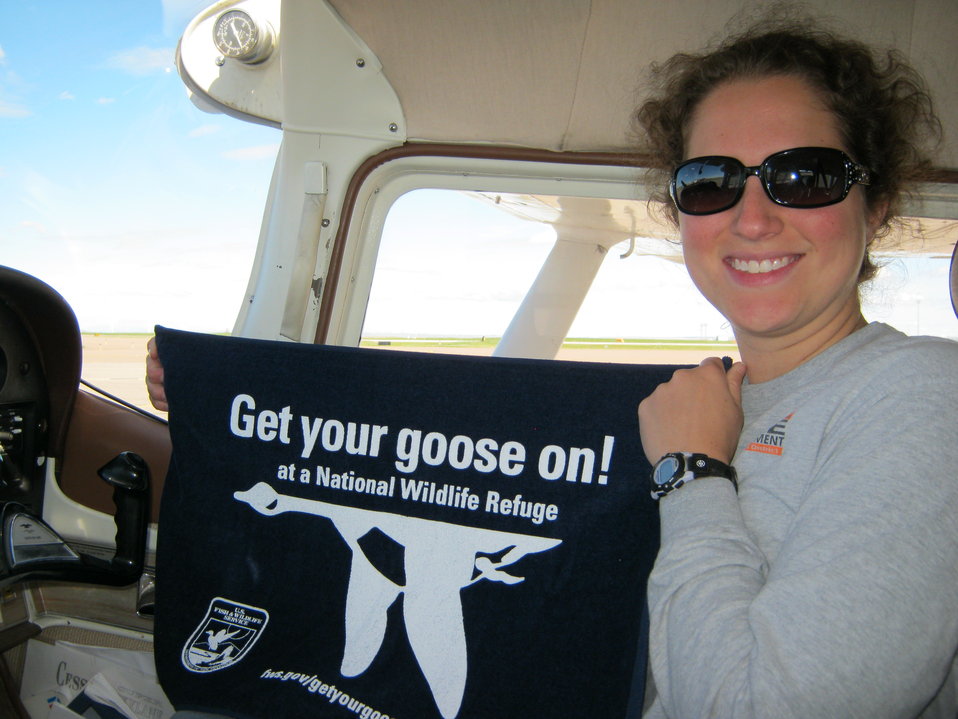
Get Your Goose On!

The goose takes flight at Benton Lake National Wildlife Refuge